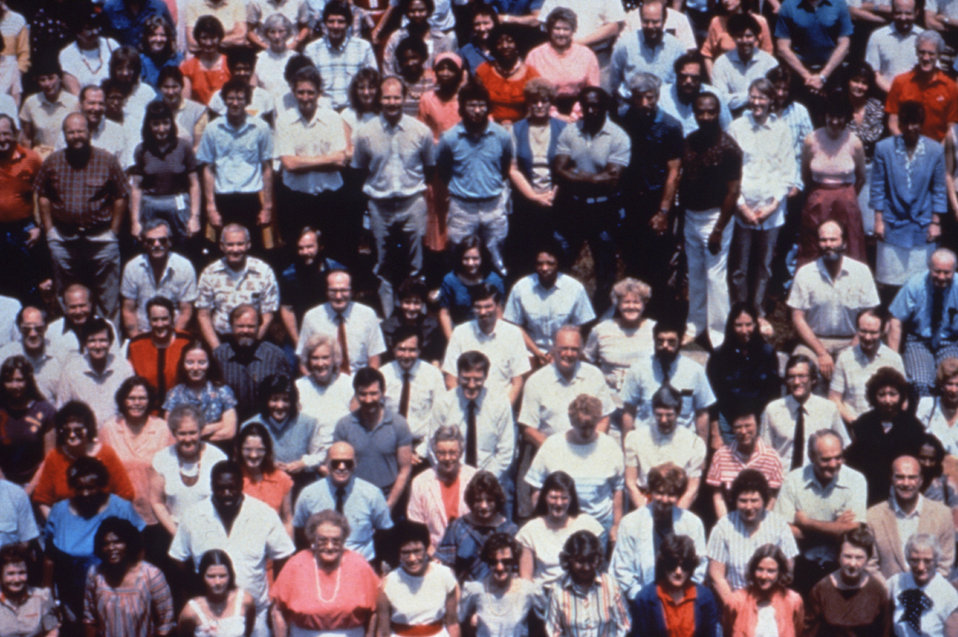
This 1980's photograph shows a crowd of healthcare practitioners employed by the CDC located in Atlanta, Georgia.